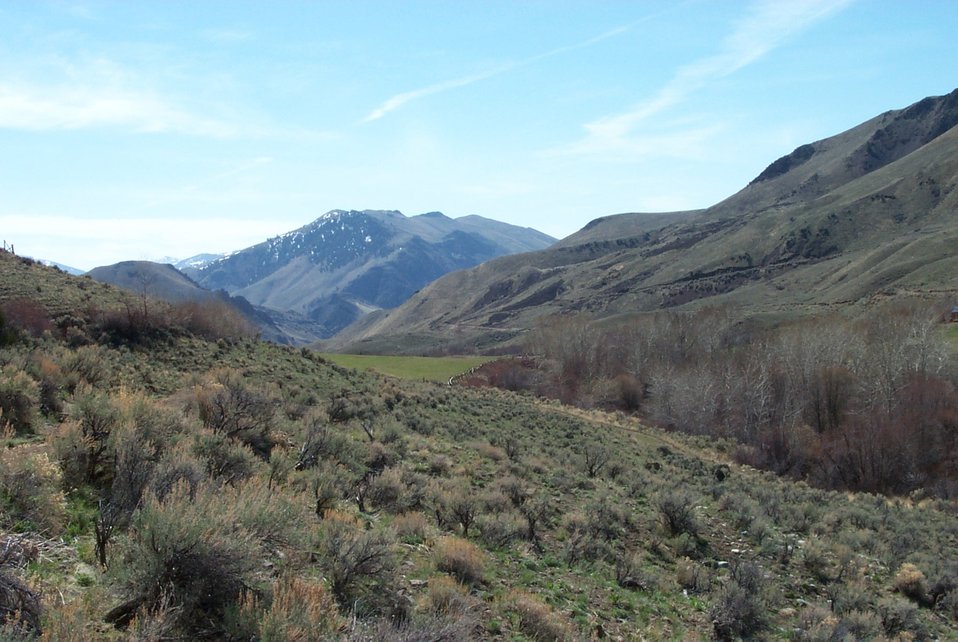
Salmon Field Office Realty Public access Exchange UCSC Upper Columbia Salmon Clearwater District